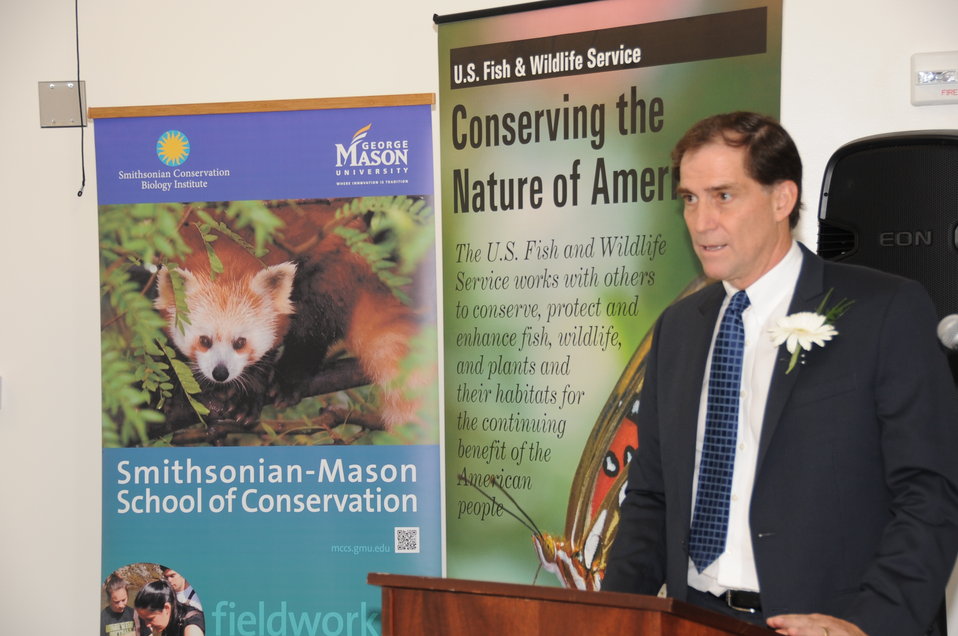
Together in Conservation

Memorandum of Understanding Signing Ceremony with U.S. Fish and Wildlife Service, Smithsonian Institution, and George Mason University. October 26, 2012